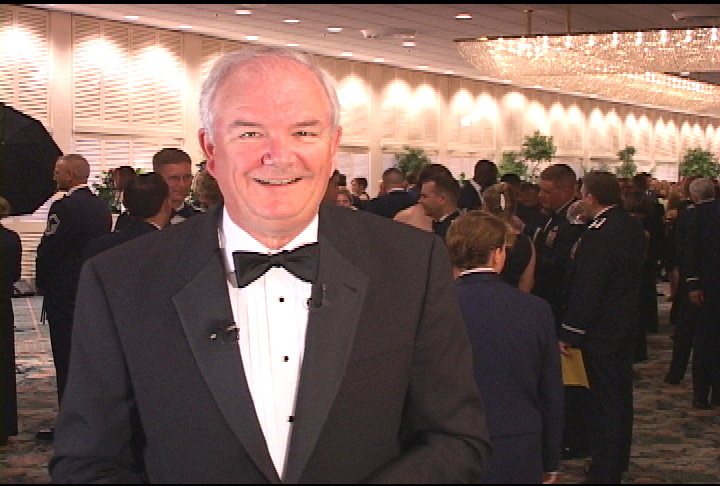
Secretary Wynne speaks at PACAF birthday ball

Secretary of the Air Force Michael W. Wynne took time to thank the men and women of the Pacific Air Forces before their sold out ball to celebrate the Air Force’s 59th birthday at a Waikiki hotel on Sept. 24. The secretary reminded Airmen that the first official event of the 60th year will be the dedication of the Air Force Memorial in October. Pacific Air Forces commander Gen. Paul V. Hester hosted the ball.